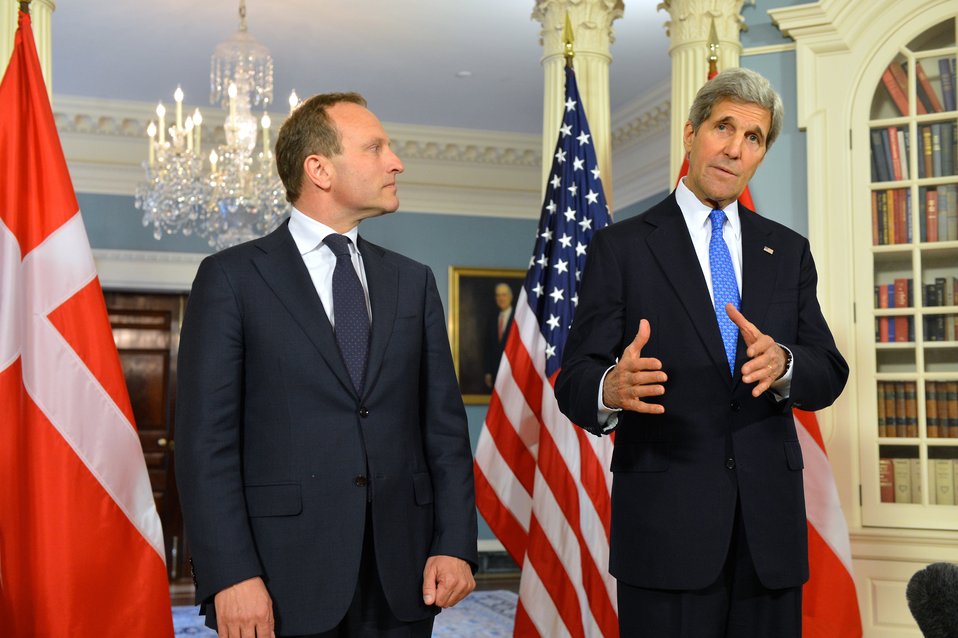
Secretary Kerry and Danish Foreign Minister Lidegaard Address Reporters

U.S. Secretary of State John Kerry and Danish Foreign Minister Martin Lidegaard address reporters at the U.S. Department of State in Washington, D.C., on May 9, 2014.